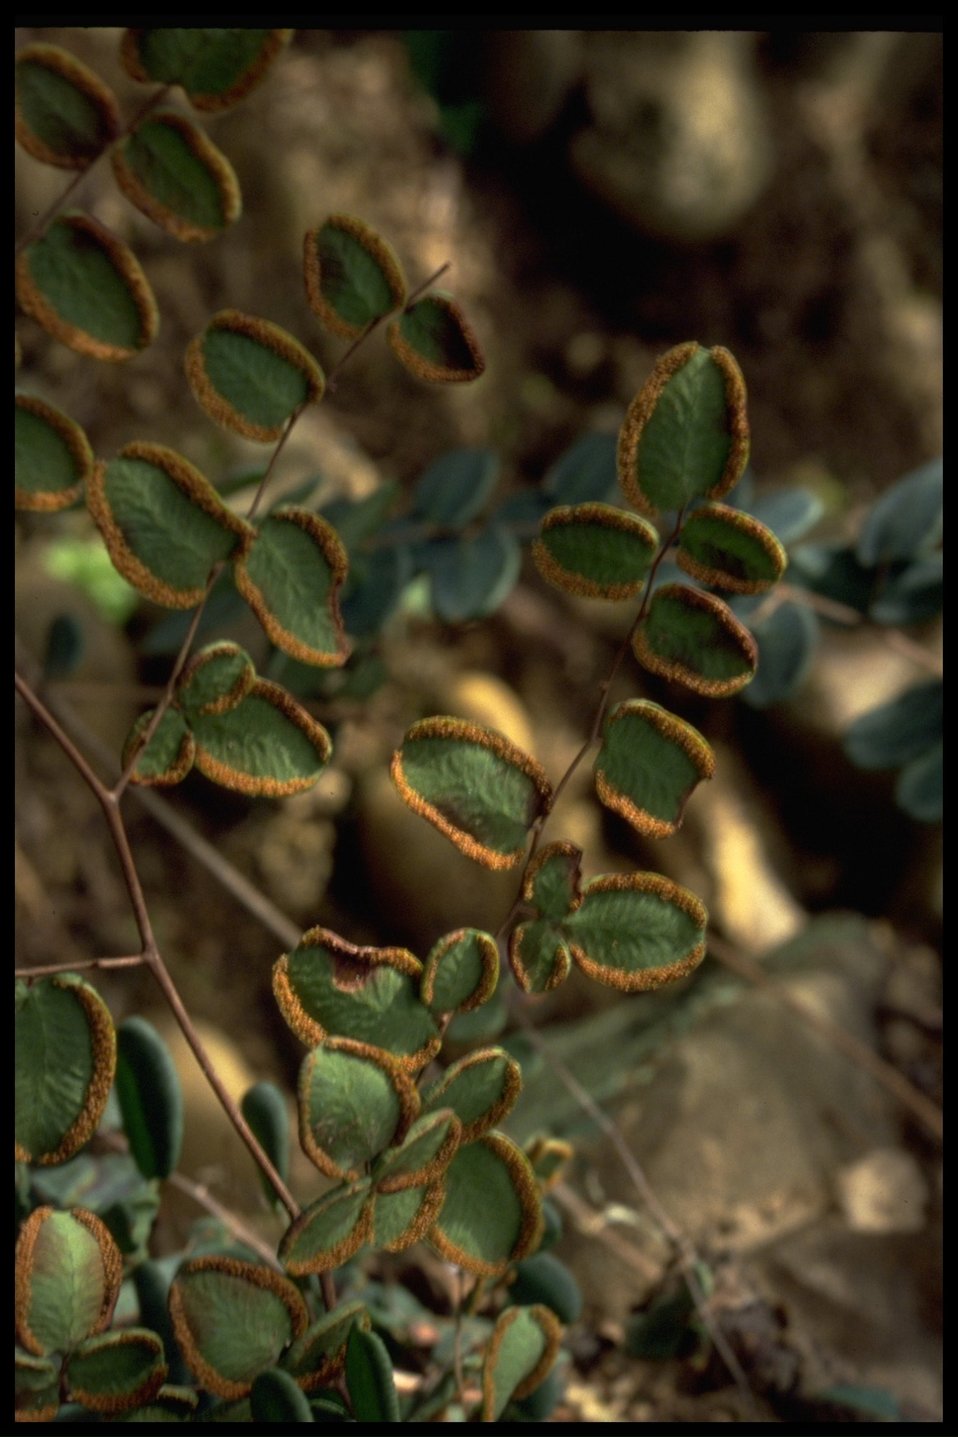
Medium shot of coffee fern (Pellaea andromedifolia).